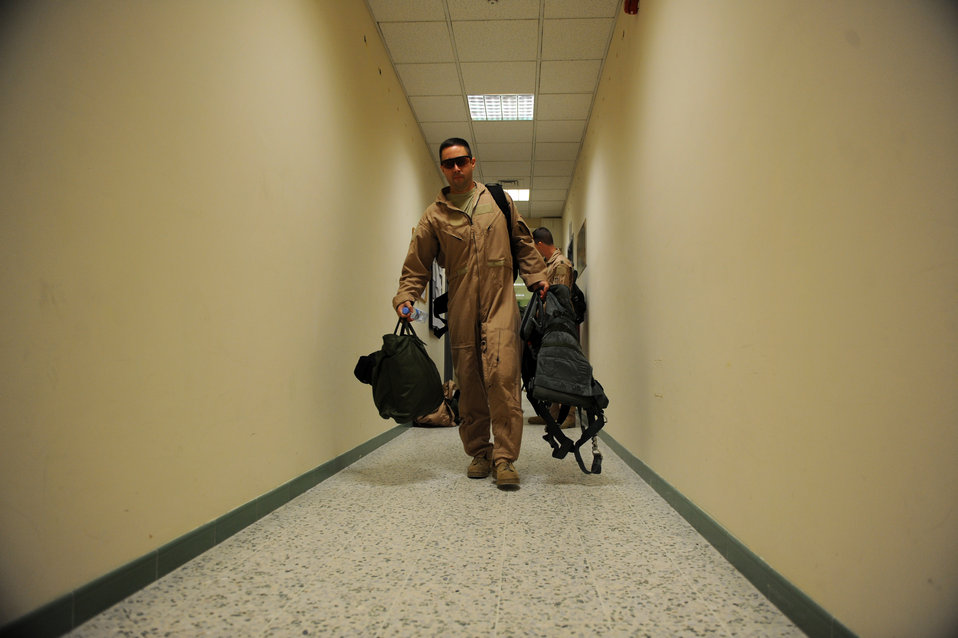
Operation Enduring Freedom

Maj. Nathan Rowan heads to a crew bus to be transported to a B-1B bomber for the last mission of his six-month deployment Jan. 23, 2010, at an air base in Southwest Asia. Major Rowan is a B-1B Lancer pilot assigned to the 37th Expeditionary Bomb Squadron.